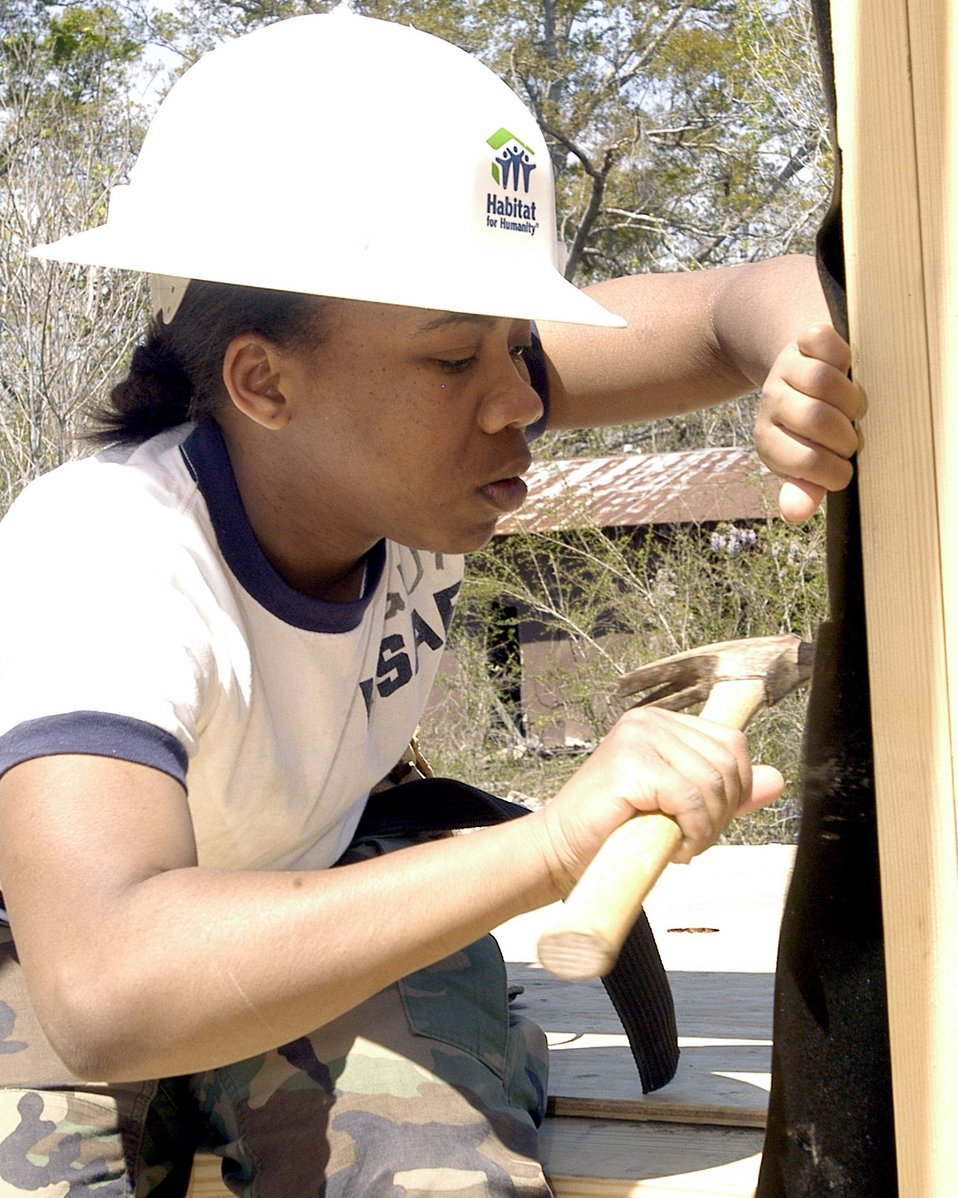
Alternate Spring Break 2006

Cadet 4th Class Jessica Guy from the Air Force Academy works with Habitat for Humanity in Hattiesburg, Miss., to install weatherproof wrap on a newly constructed house on Monday, March 27, 2006. Approximately 140 cadets volunteered their spring break to help rebuild the disaster struck area in Biloxi, Miss., and surrounding cities.